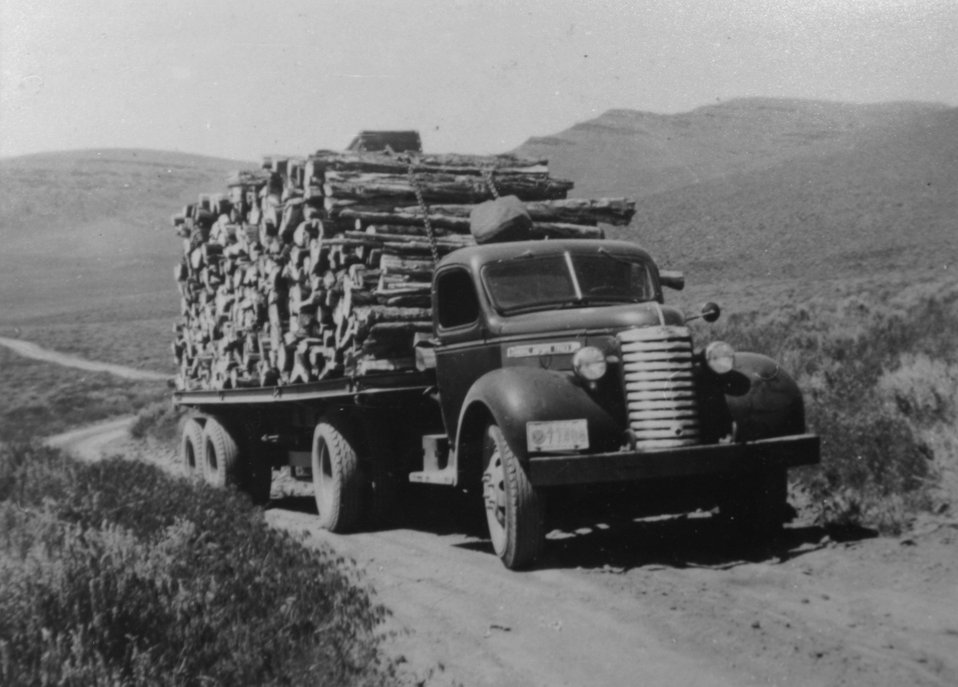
Hauling juniper Posts cut and split by CCC. Stinking Water Mtn. area. Circa 1940 Joe Urbanek photograph